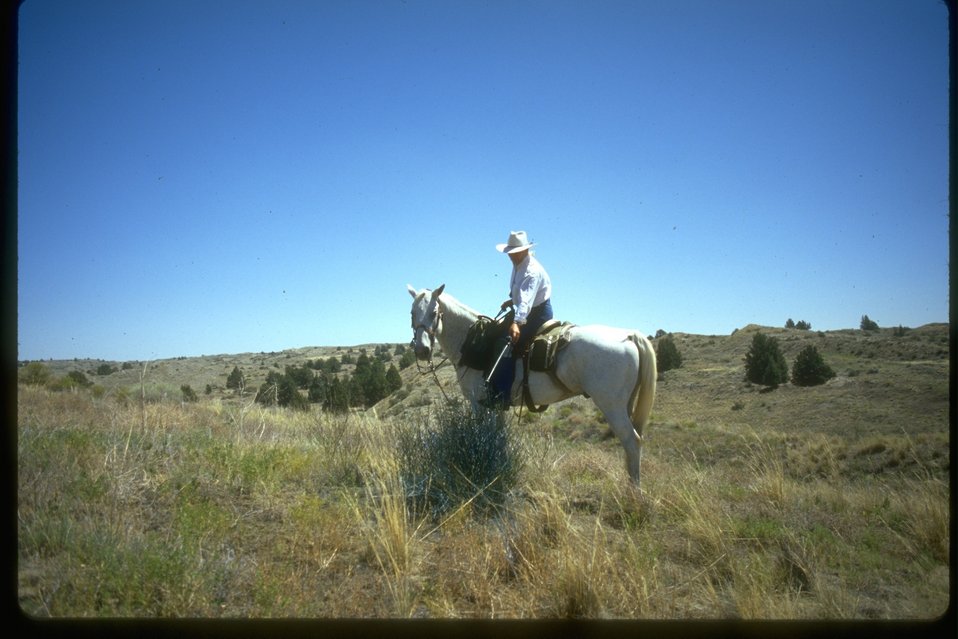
Contractor applying herbicides to rush Skeletonweed at Sand Dunes Wilderness in Washington.